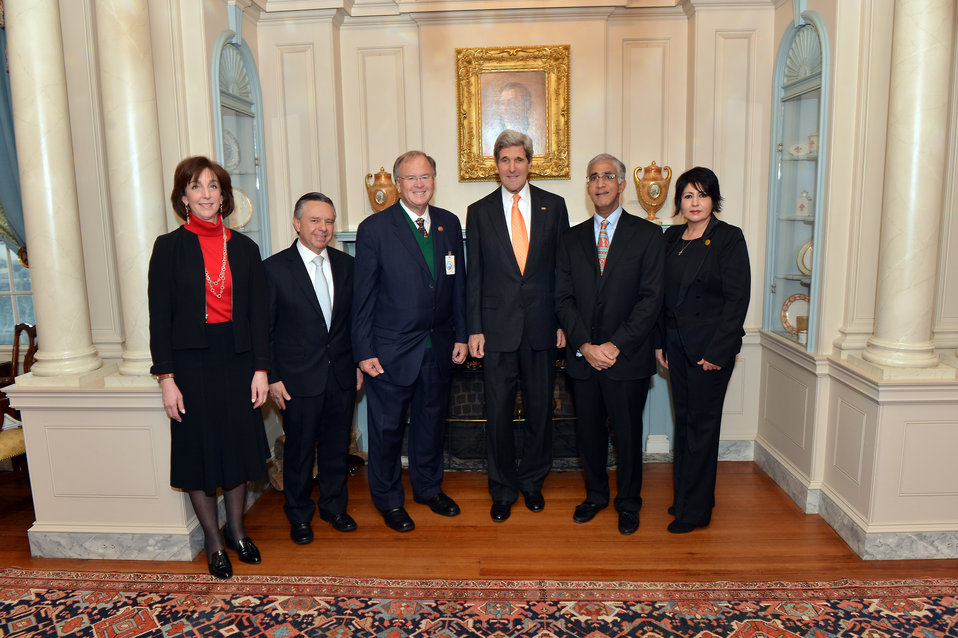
Secretary Kerry Poses for a Photo With Kenneth Kannappan of Plantronics, Inc. in Mexico

U.S. Secretary of State John Kerry poses for a photo with Kenneth Kannappan, the CEO of Plantronics, Inc. in Mexico, right of the Secretary, at the U.S. Department of State in Washington, D.C., on January 29, 2014. Also pictured on the far left is Assistant Secretary of State for Western Hemisphere Affairs Roberta Jacobson. Plantronics, Inc. in Mexico received the first-ever Secretary of State's Award for Corporate Excellence for a medium-sized business.